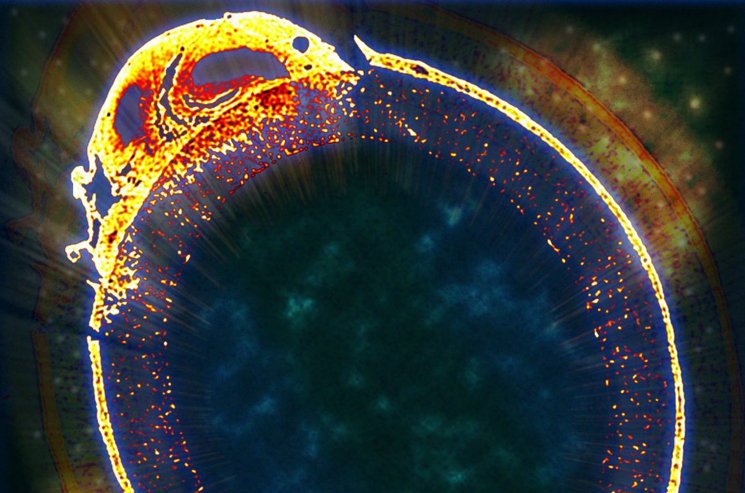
Biofilm for Carbon Capture

This slice can help sequester carbon. The x-ray microtomography image shows a slice of biofilm grown on a porous hollow fiber (500 microns in diameter). By working with the chemical and physical interactions of biofilms, we can gain insight into how microorganisms can help sequester carbon, reducing environmental impact. This photo was submitted to Pacific Northwest National Lab's 2012 Science as Art Contest by Mathew Thomas and the Systems Toxicology Group. Receiving the most likes on Facebook, this photo won the People's Choice award and will appear in the Lab's 2013 Calendar. | Photo by Mathew Thomas and the Systems Toxicology Group.

Photo of the Week: June 29, 2012